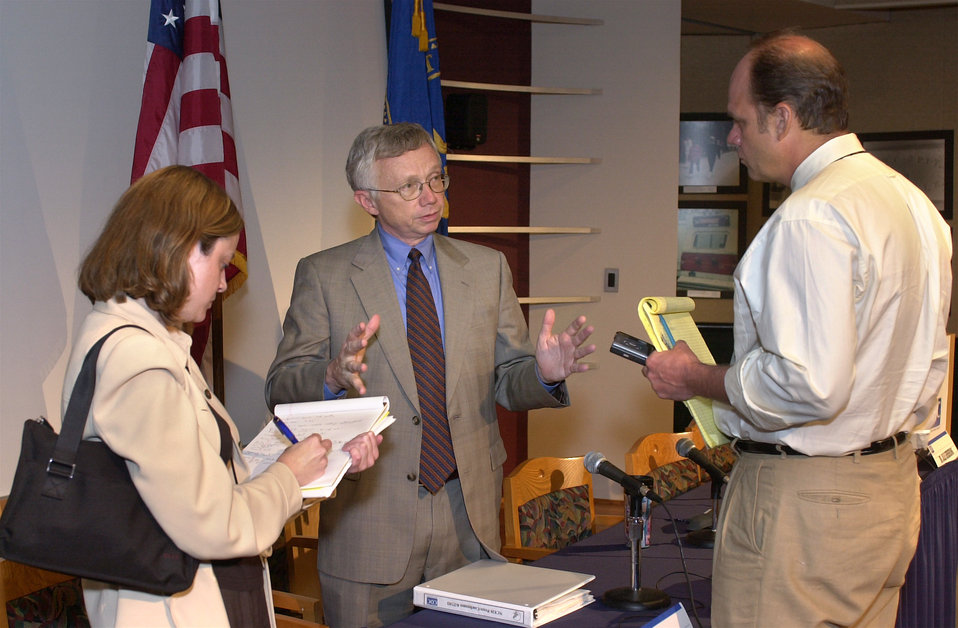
Director of National Center for Environmental Health, Richard J. Jackson, MD, MPH, speaks with reporters during August's Bioterrorism Preparedness Press Briefing.